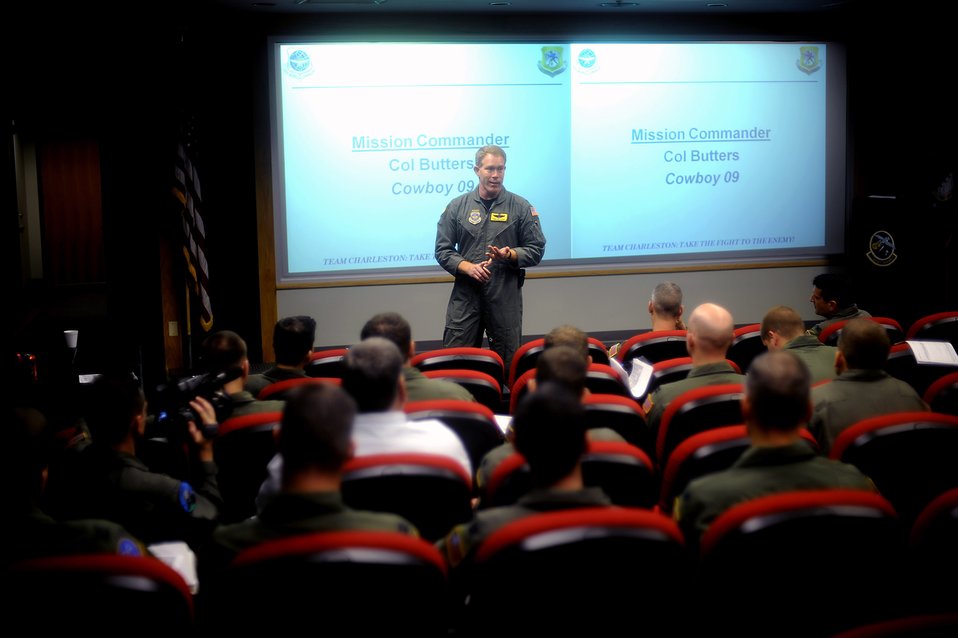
Show of force

Col. Anthony Butters briefs pilots and aircrew from the 437th and 315th airlift wings before stepping to their planes for a strategic brigade airdrop exercise involving a 13-ship formation Dec. 18 from Charleston Air Force Base, S.C. C-17 Globemaster III transporters must be able to meet the Army's goal of airdropping a brigade's worth of troops and equipment (about 3,250 Soldiers and 3,450 tons of equipment). Colonel Butters is the C-17 mission commander.